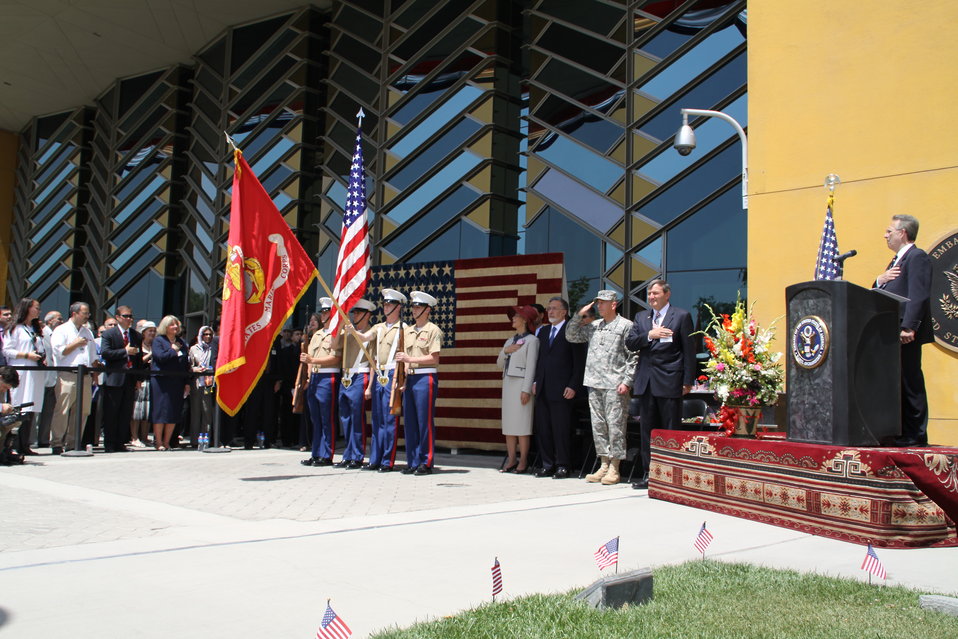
Kabul Official July 4th Celebration